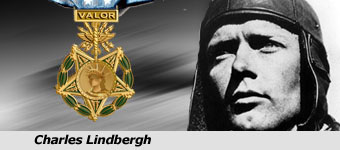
Capt. Charles Lindbergh is a Medal of Honor recipient for his solo flight across the Atlantic Ocean to Paris in 1927. He is one of two awardees in peacetime.